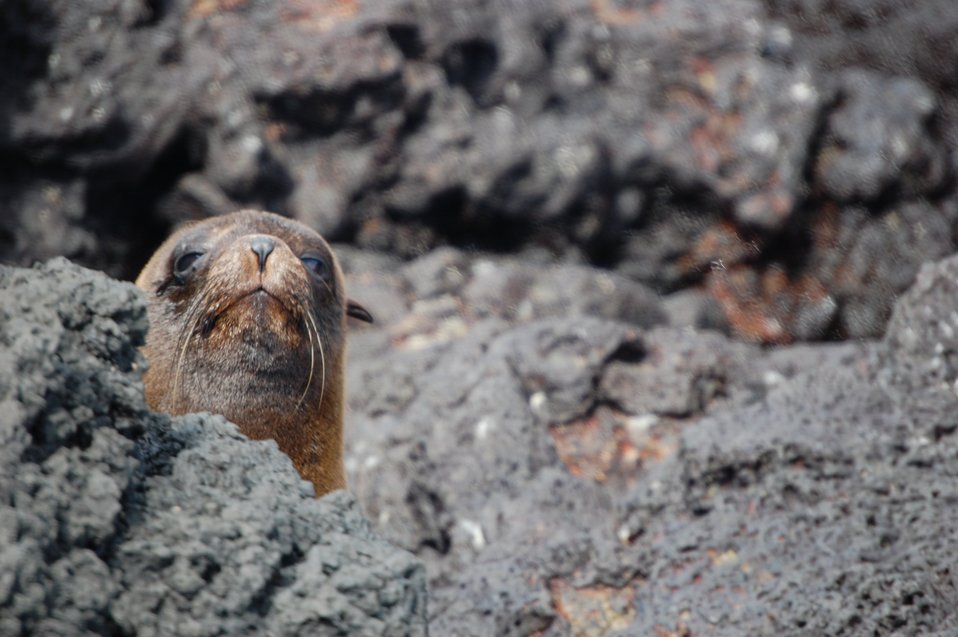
Fur seal.